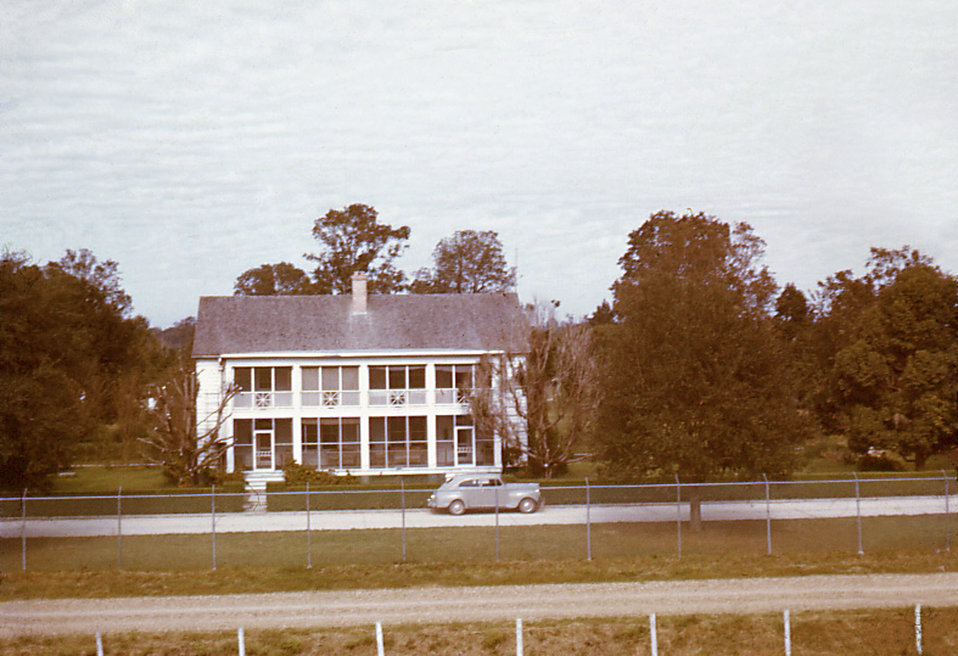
At the time of this historic photograph, this building acted as the home for the five resident doctors on the Carville, Louisiana Leprosarium's staff."Patients of the U.S. Marine Hospital in Carville, Louisiana, produced a set of 35 mm slides around 1950 from which this image was derived. In 2002, a patient's son donated the set, the only one known in existence, to the museum. The father, a patient at Carville for several years, brought these slides home around 1950 to give his family a snapshot of life at the national leprosarium. The act of quarantining patients for leprosy (HD) remained law in the state of Louisiana until 1957."Today, the National Hansen's Disease Museum stands as a monument to those who battled Hansen's Disease (leprosy)--researchers and health care professionals, as well as those who suffered from the affliction.